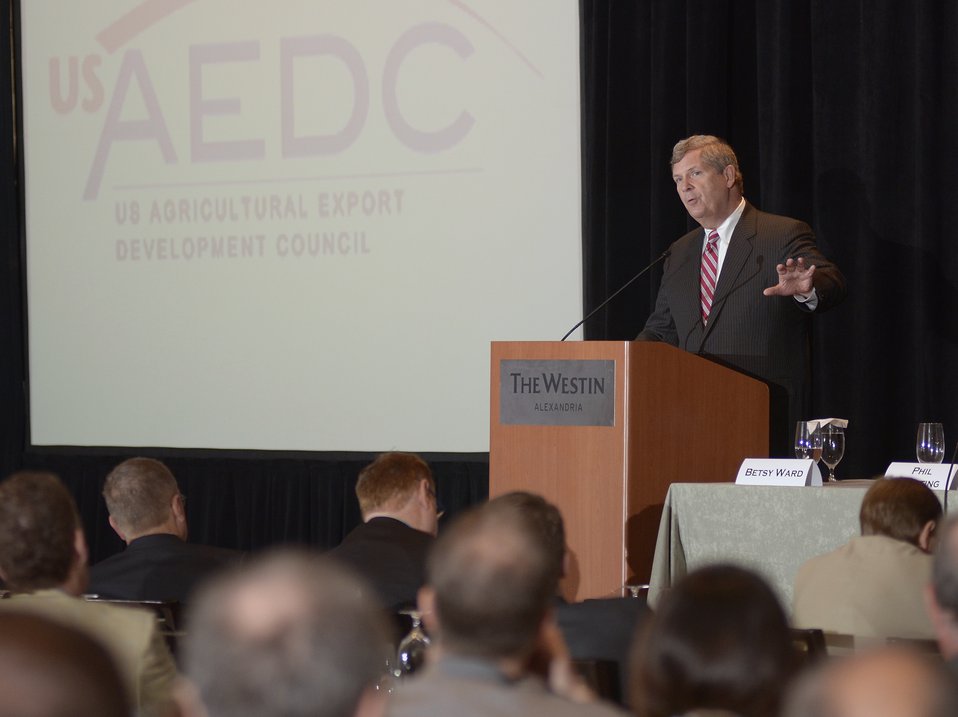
Agriculture Secretary Tom Vilsack presents keynote remarks at the U.S. Agricultural Export Development Council (USAEDC) Attaché Seminar, at the Westin Alexandria, in Alexandria, VA, on Wednesday, July 10, 2013. USAEDC is a non-profit private sector trade association that provides an exchange and coordination of information to promote the export of the products of U.S. agriculture. Their membership includes U.S. commodity trade associations, farmer cooperatives and state regional trade groups from around the country. In the interest of U.S. agricultural growers and producers their export promotion efforts, work in conjunction with the U.S. Department of Agriculture Foreign Agricultural Service.